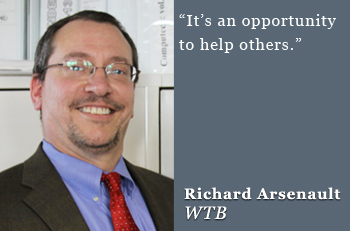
richard-arsenault